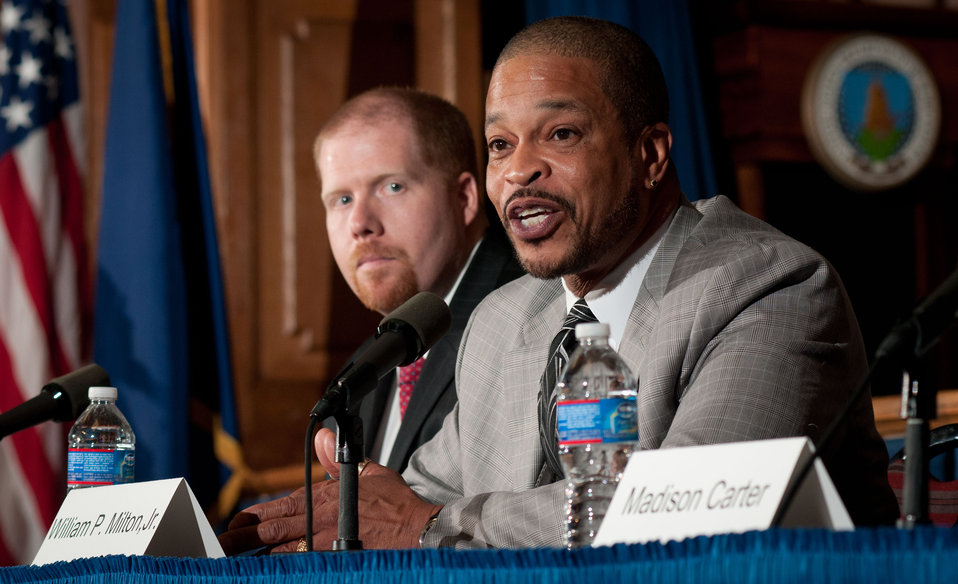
United States Department of Agriculture (USDA) Departmental Management Office of Human Resources Management Deputy Director William P. Milton, Jr. participated in the panel discussion during the Work Force Recruitment Program’s (WRP) “Your Key To Hiring Student Interns and Employees with Disabilities” event hosted by the United States Department of Agriculture (USDA) and held in the Jefferson Auditorium, in Washington, D.C. on Tuesday, February 7, 2012.